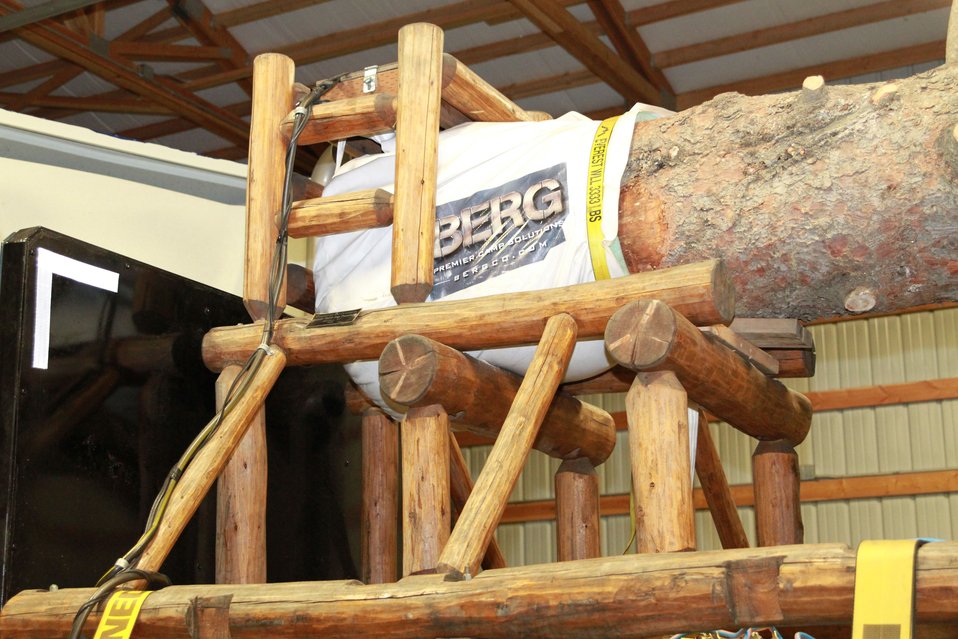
CCT bladder 2

Keeping the U.S. Capitol Christmas Tree from drying out is important during the 5,000-mile trip from Washington State to Washington, D.C. The end of the trunk is wrapped with a 40-gallon bladder that is refreshed throughout the trip. The tree needs more than 50 gallons of water each day to stay fresh.